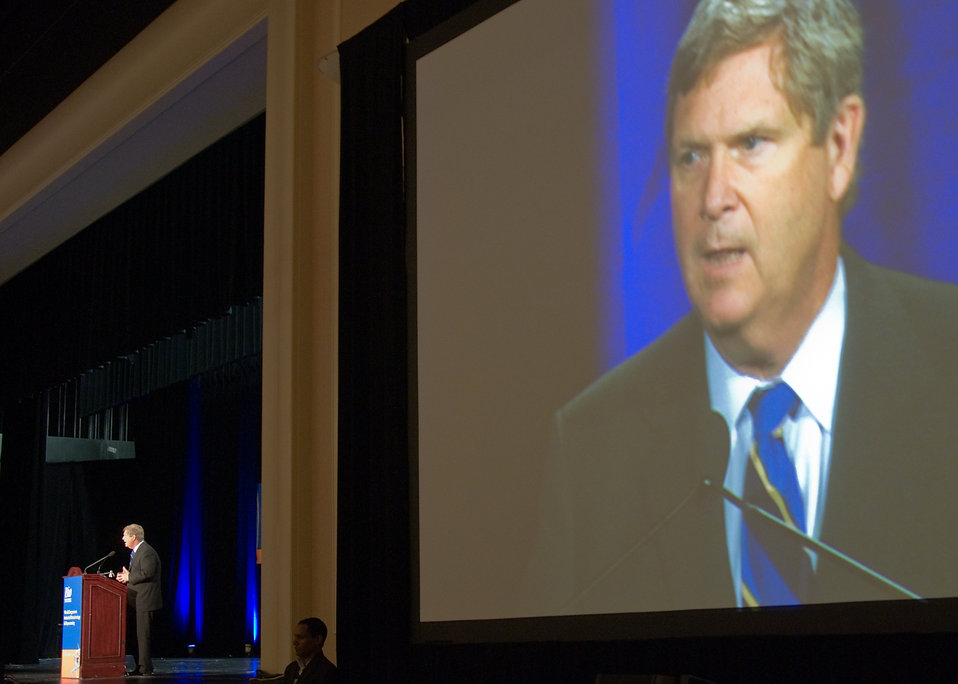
Agriculture Secretary Tom Vilsack spoke at the plenary general session, “The Marriage of Industrial and Agricultural” at the Bio – Biotechnology Industry Organization sponsored by The World Congress on Industrial Biotechnology and Bioprocessing at the National Harbor, DC on Tuesday, June 29, 2010. Secretary Vilsack discussed the partnership and cooperation of the federal government and private industry in developing biotechnology for farm, fuel and industry. USDA Photo 10di1423-014.